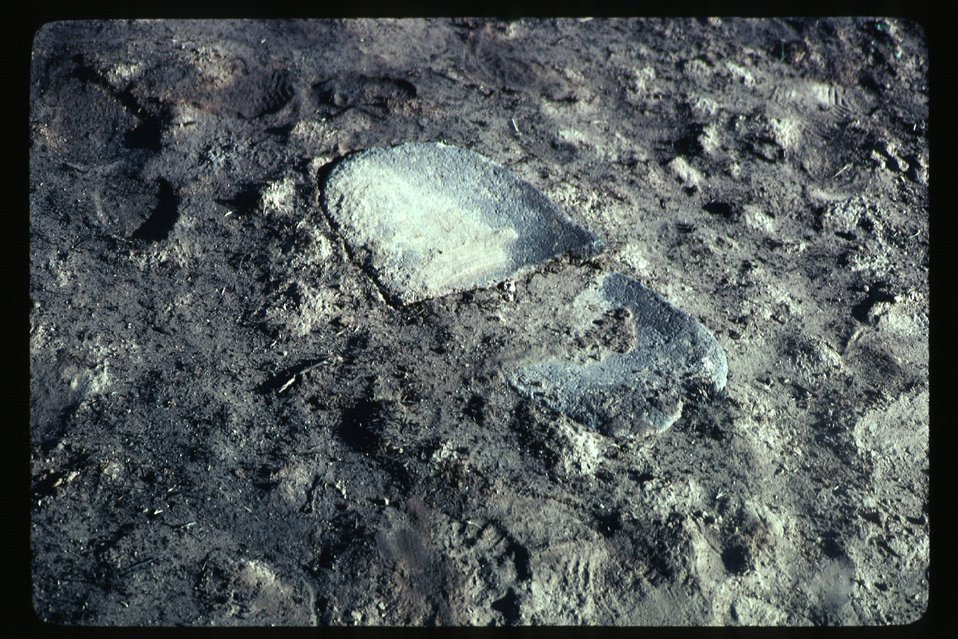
Metate found on Devil Creek Fire Rehab Archeology LSRD Lower Snake River District